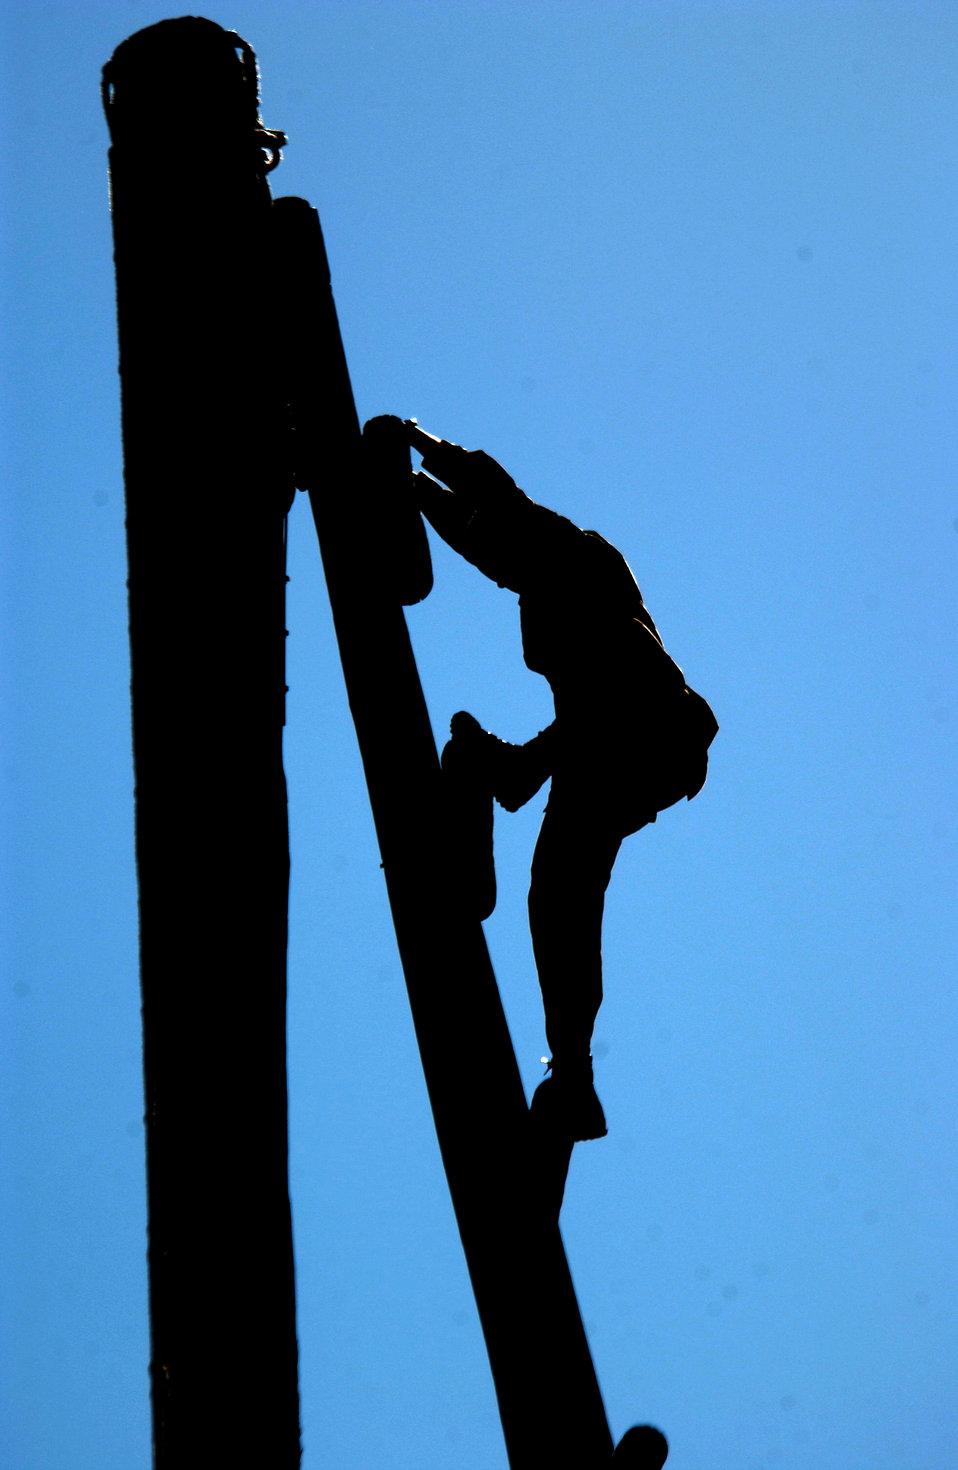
The

FORT HUACHUCA, Ariz. -- Senior Airman Robert Crenshaw climbs down the backside ladder on the first training obstacle named